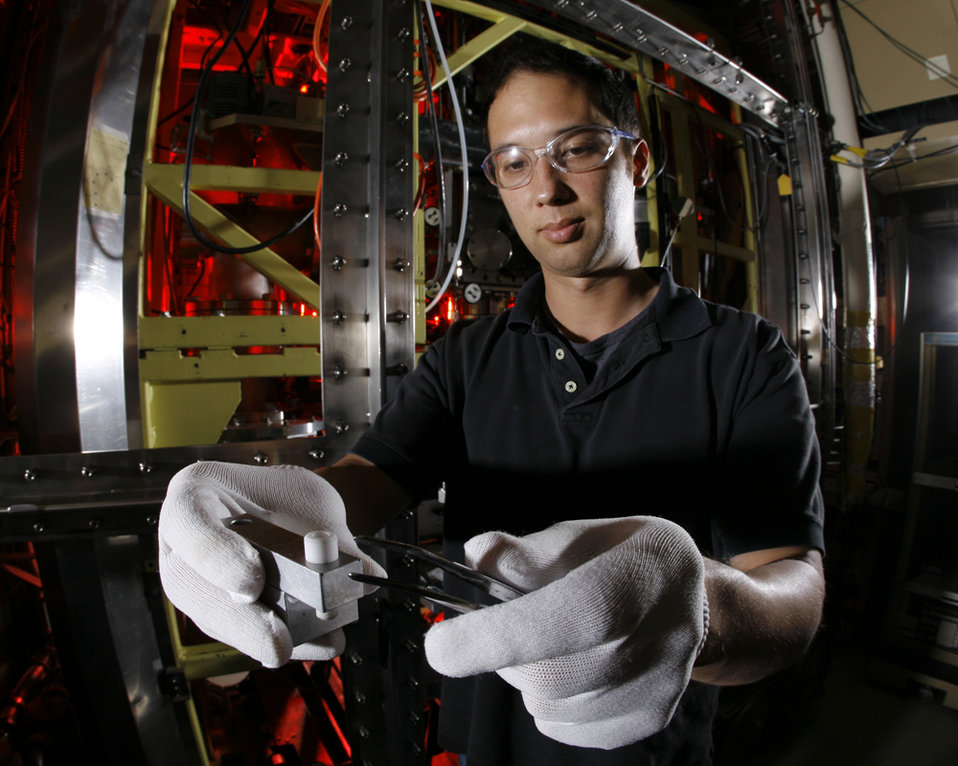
Aaron Highley prepares a metal hydride sample for analysis at Sandia National Laboratory..

Sandia is developing computational models to better predict the behavior of materials that would be used to store hydrogen in automotive fuel tank systems. Advanced metal hydrides and other chemical being considered for hydrogen storage absorb and hold hydrogen within their molecular structures and release it when subjected to heat. Hydrides can react when exposed to air and moisture. Sandia is one of the six institutions that received DOE funding for applied hydrogen storage research.